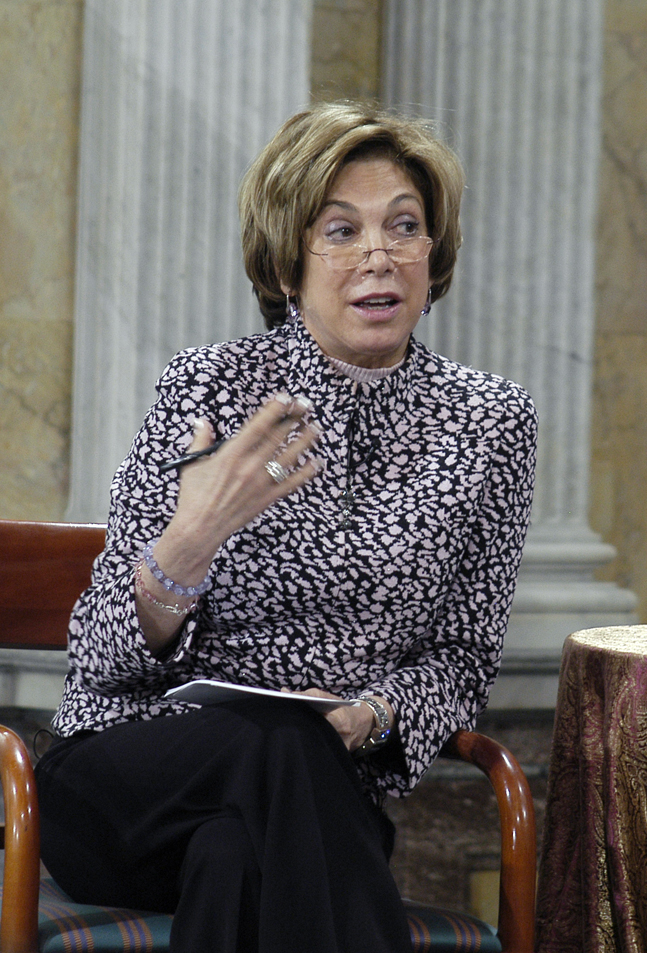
Women in Finance Symposium, 03/29/2010

President's Economic Recovery Advisory Board member Laura Tyson speaks at the Women in Finance Symposium on March 29, 2010 at Treasury.